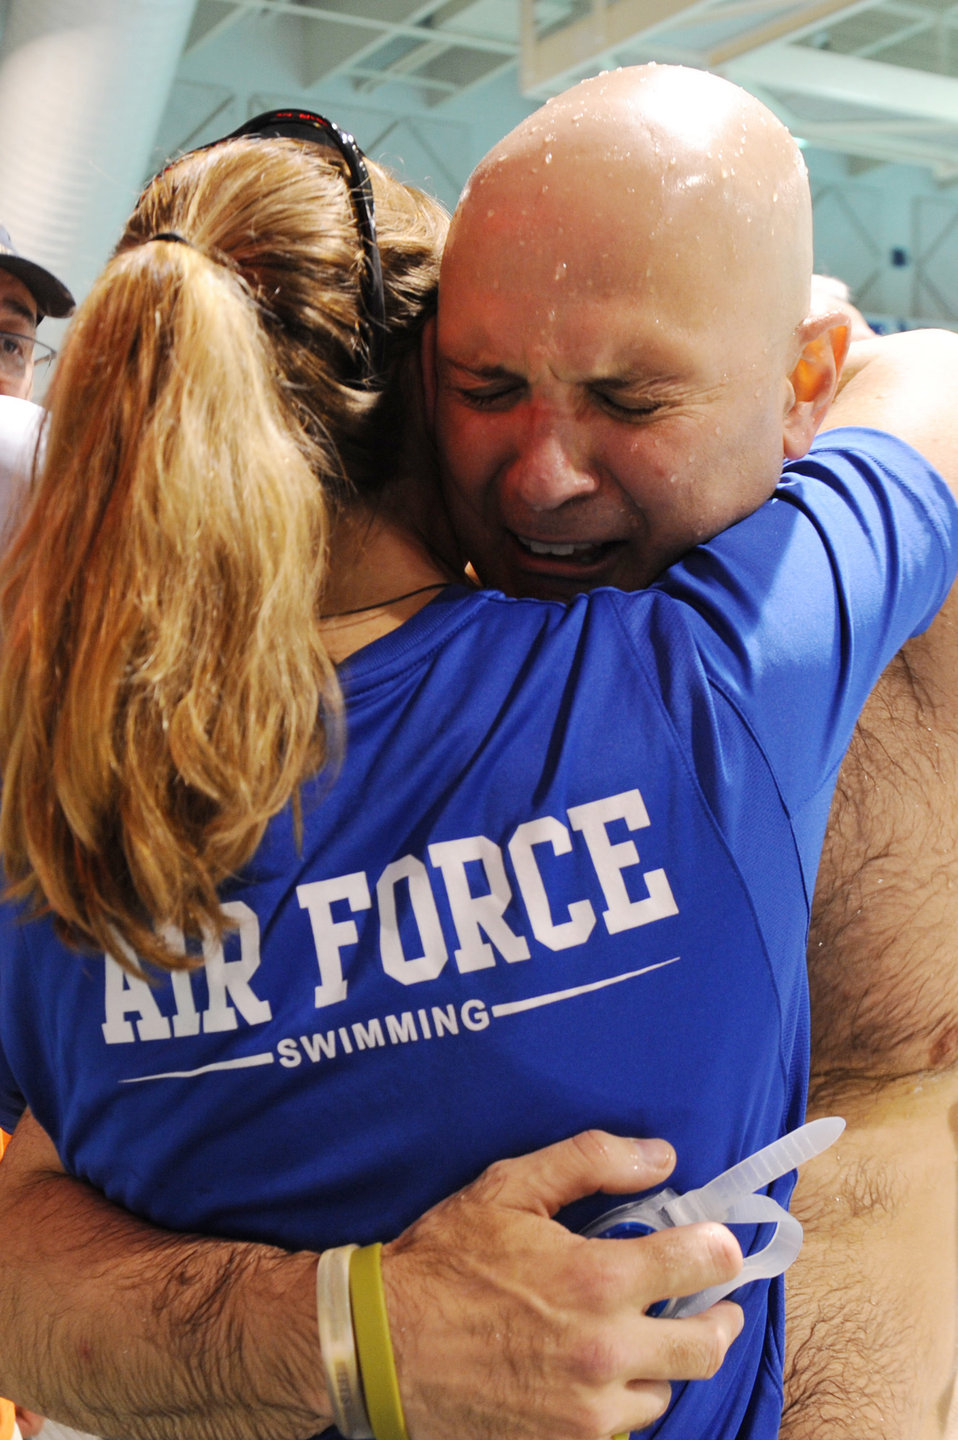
Air Force makes splash

Air Force coach Cami Stock hugs Damian Orslene after he finished the men's 50m freestyle during the preliminary swimming competition May 18, 2011, during the Warrior Games at the U.S. Olympic Training Center in Colorado Springs, Colo. More than 200 wounded warriors from all the military services are competing in paralympic-style athletic events May 16 through 21.